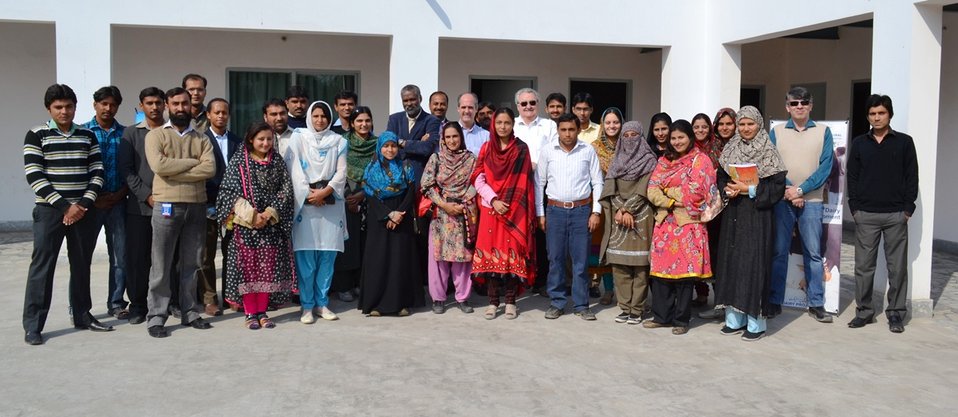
The Dairy Project's social mobilizers and master trainers at the project's Chichawatni field office with Ted Gehr, Director USAID Punjab and Jack Moser, Project Director, Dairy Project.